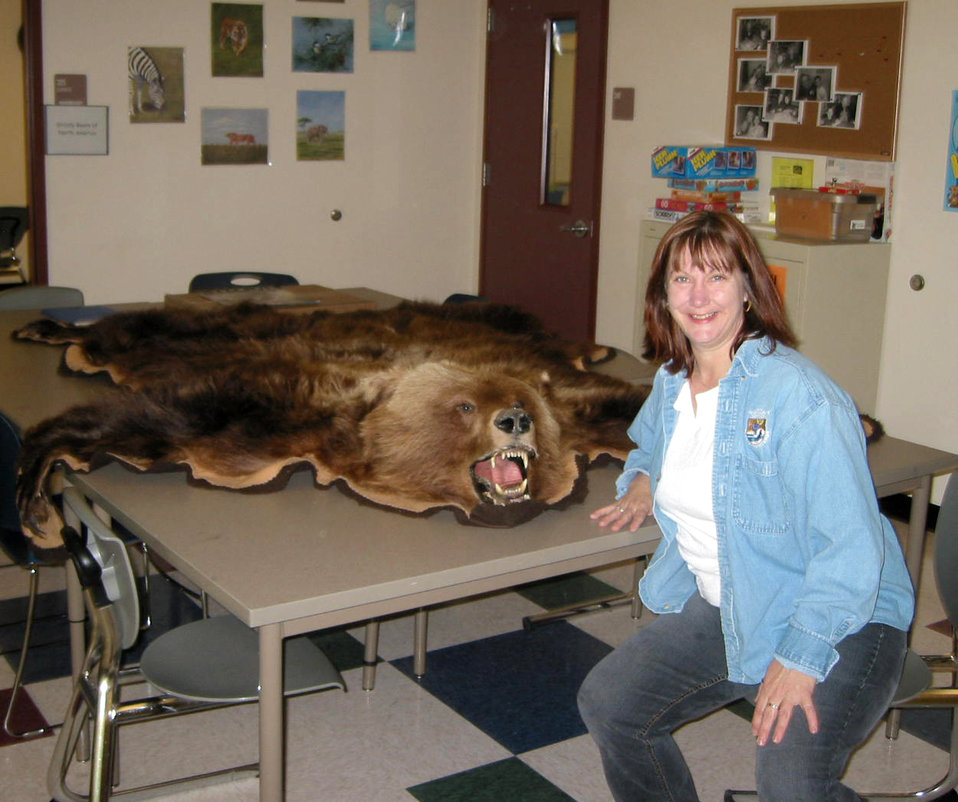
Jane Chorazy, Outreach Specialist and Tribal Grants Manager for the Pacific Region External Affairs Office, served in the U.S. Navy from 1980 to 1986 as a Cryptologist/Communications Specialist stationed in Yokosuka, Japan, and the Naval Communications Station in Wahiawa, Hawaii. Jane is “proud of my military service and enjoyed the opportunity to serve my country and gain valuable experience.”